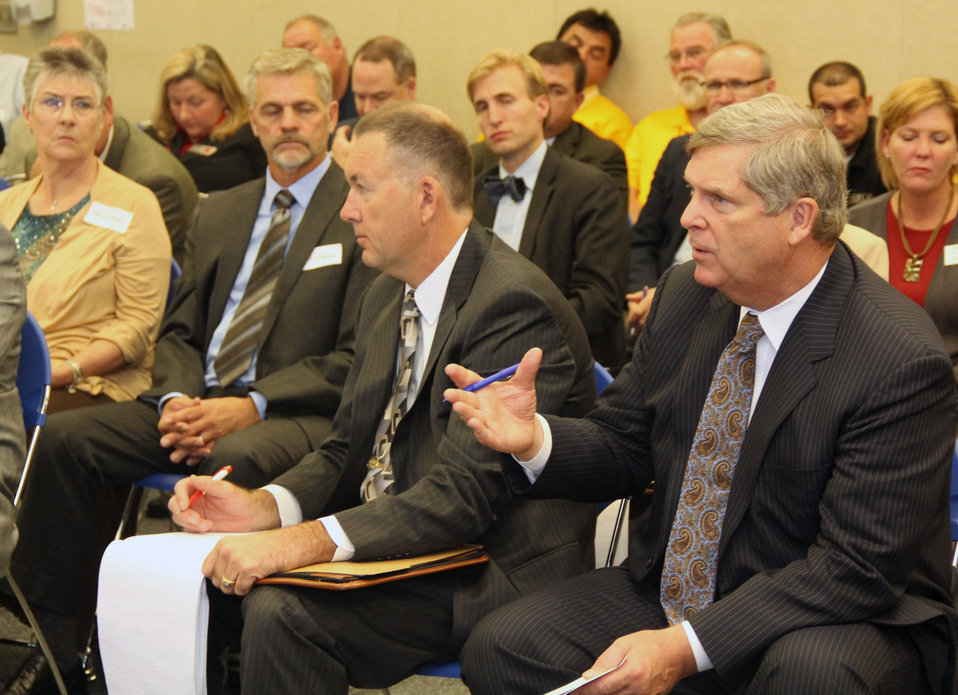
Agriculture Secretary Tom Vilsack leads a Federal Drought Workshop in Omaha, NE on Tuesday, Oct. 9, 2012. This was the first of four regional workshops to outline resources available to assist with drought recovery effort. Secretary Vilsack indicated that President Obama had directed federal agencies to take every possible step to help farmers and ranchers, businesses, and rural communities recover as a result of one of the country's worst droughts in decades. The U.S. Department of Agriculture (USDA) is partnering with local, state and federal partners to hold the workshops, working closely with the Department of Commerce, the Small Business Administration and the Federal Emergency Management Agency to facilitate these meetings.